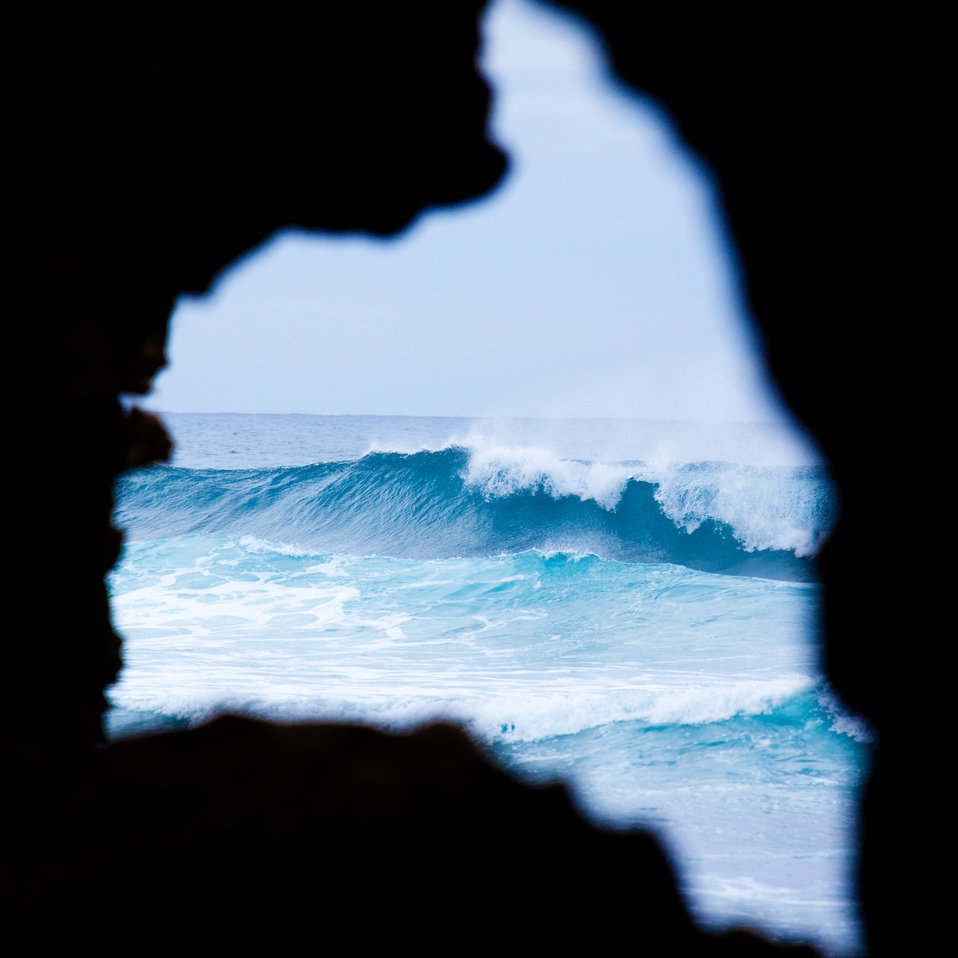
Waves through rock window

Huge waves through a rock window.